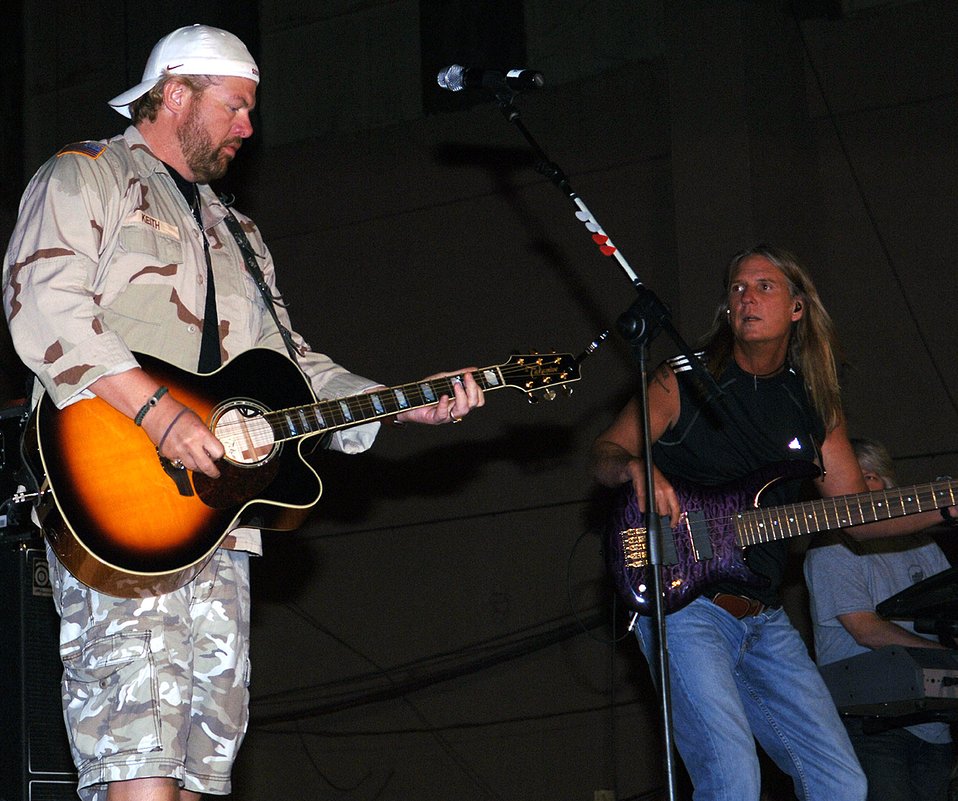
American country star plays in Afghanistan

More than 1,500 Airmen, Marines, Soldiers and Sailors turned out to hear country singer Toby Keith perform May 18 at the Craig Joint Theater Hospital's Medevac hangar at Bagram Air Base, Afghanistan. Mr. Keith has been touring bases since the beginning of Operation Enduring Freedom. The 455th Air Expeditionary Wing's primary mission is to support the war on terrorism by providing aerial support for U.S. and coalition forces on the ground in Operation Enduring Freedom.